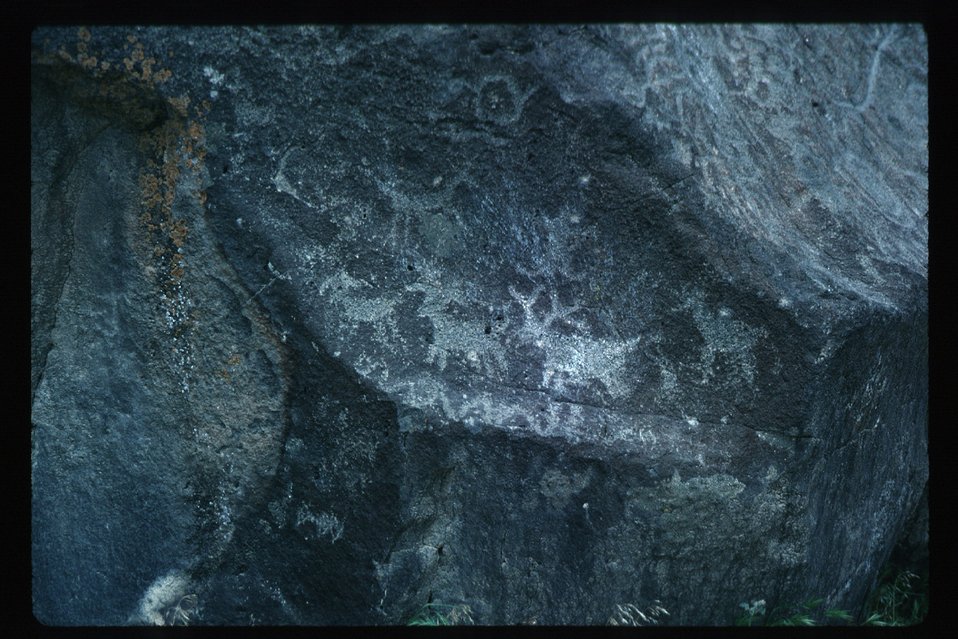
Map Rock Archeology LSRD Lower Snake River District